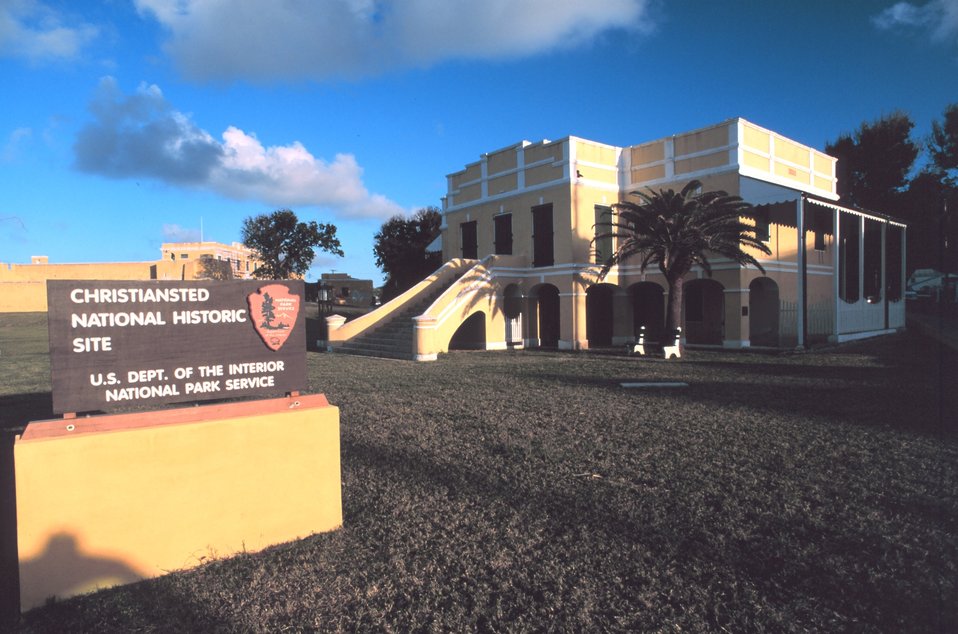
The old Danish Customs House in downtown Christiansted, now maintained by the National Park Service.